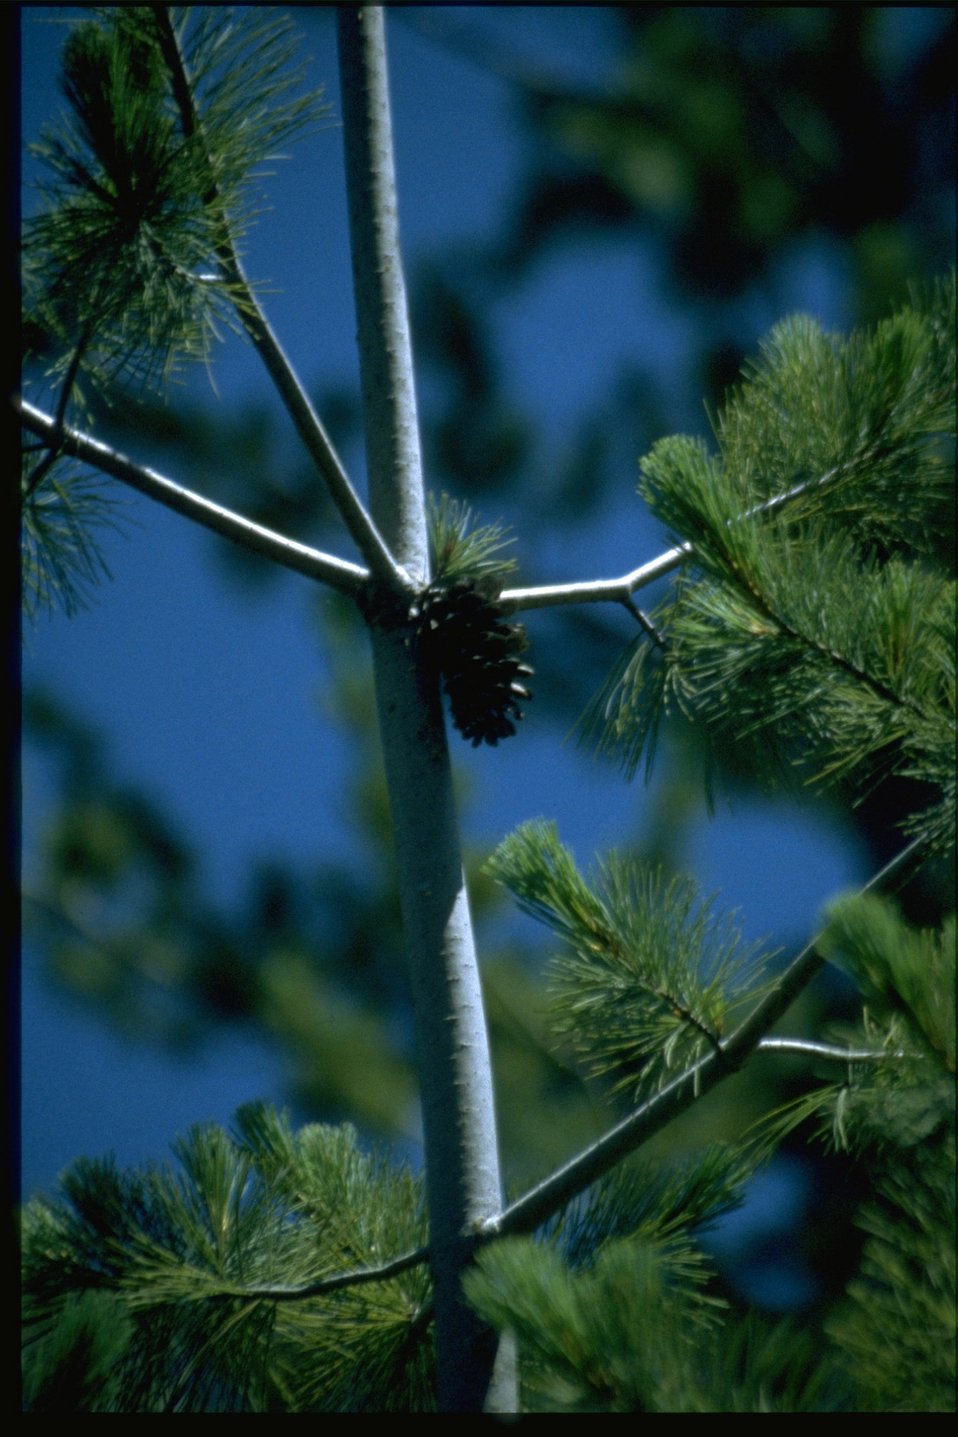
Medium shot of Knobcone Pine, Pinus attenuata.